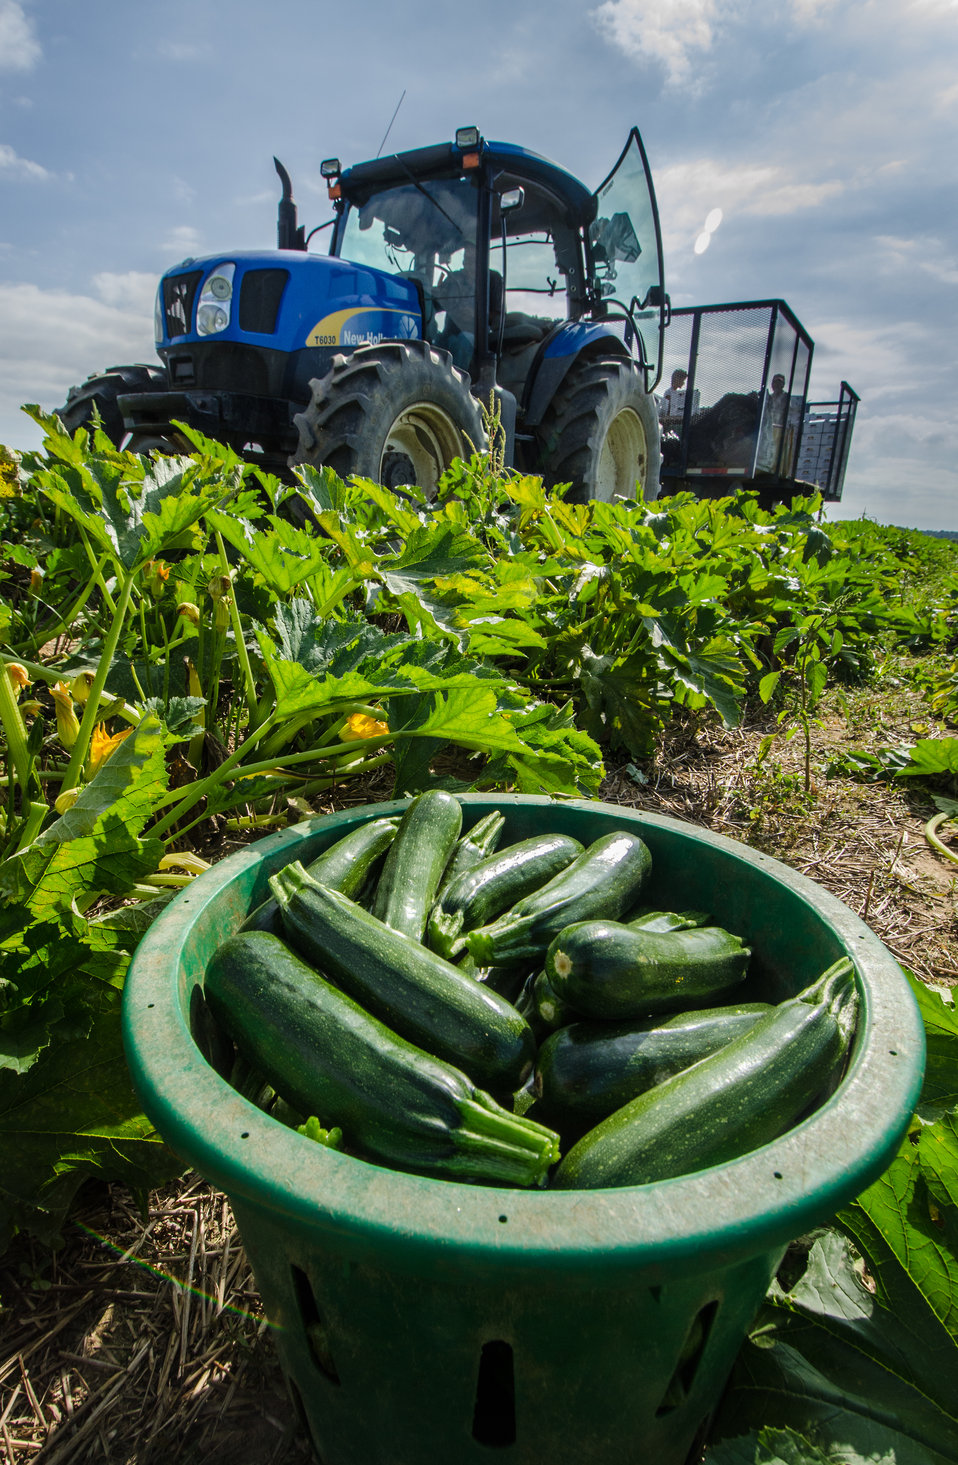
Just-picked green zucchini squash waits to be loaded onto a processing trailer at Kirby Farms in Mechanicsville, VA on Friday, Sep. 20, 2013. Migrant workers will carefully rinse and pack the fruit for shipment to wholesalers. Kirby Farms is a third-generation family farm that covers 500 acres and generates produce and grains on a year-around operation.